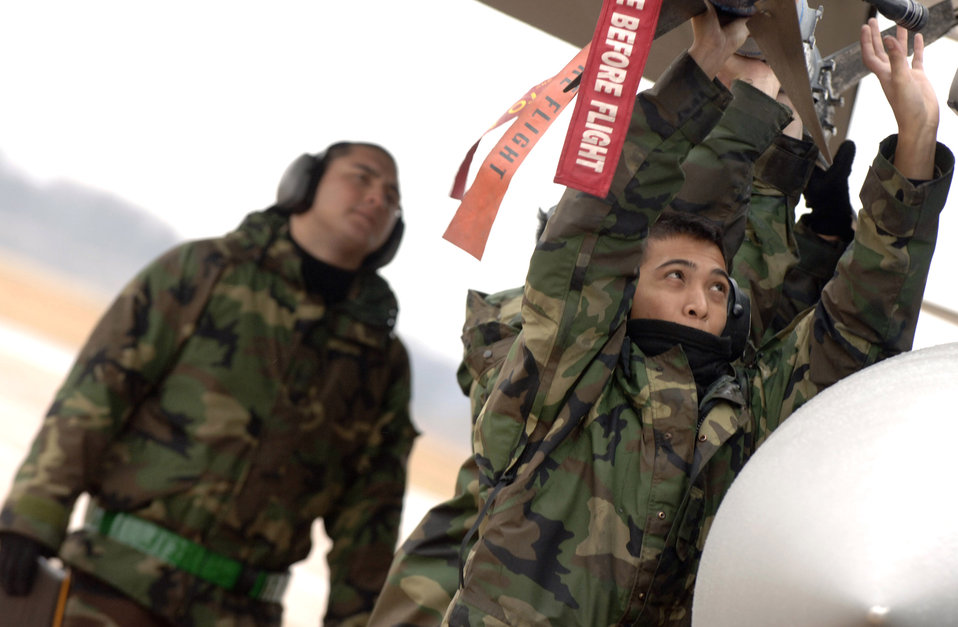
Loading up for competition

Senior Airman Ramos Ishmael and teammates place a missile on an F-15 Eagle during the annual Load Competition of the Year Jan. 18 at Langley Air Force Base, Va. The competition evaluates technical proficiency, safety procedures and overall time. The Airmen are with the 71st Fighter Squadron.